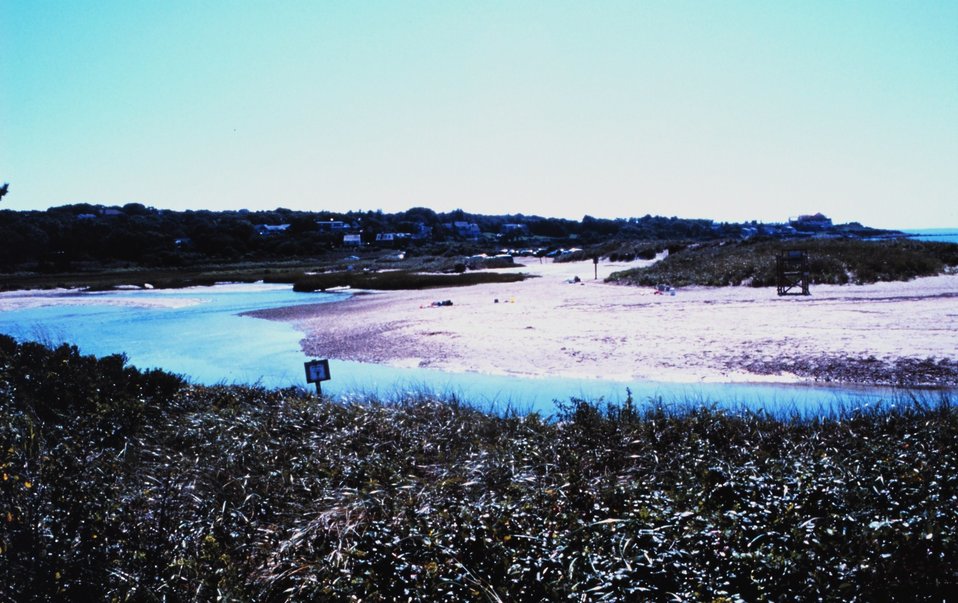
Woodneck Beach - Little Sippewissett Marsh, Falmouth